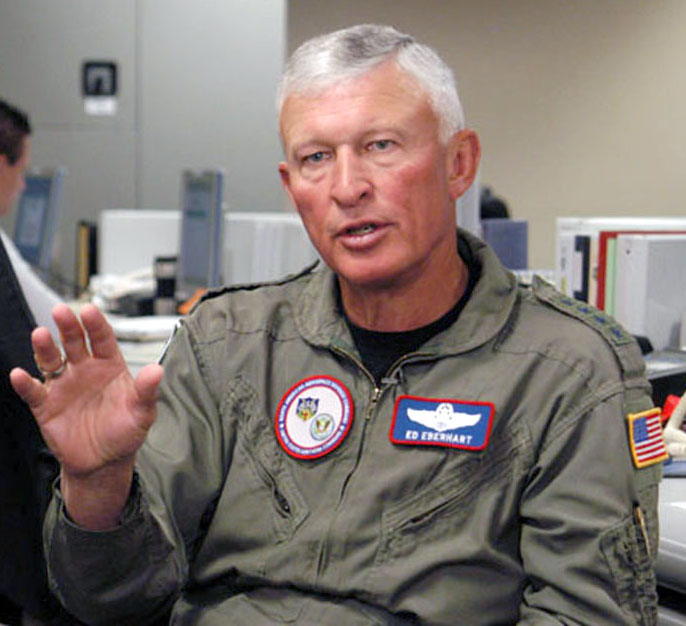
Northern Command boss

PETERSON AIR FORCE BASE, Colo. -- Gen. Ed Eberhart is the commander of U.S Northern Command. The command is responsible for protecting Americans where they live and work.